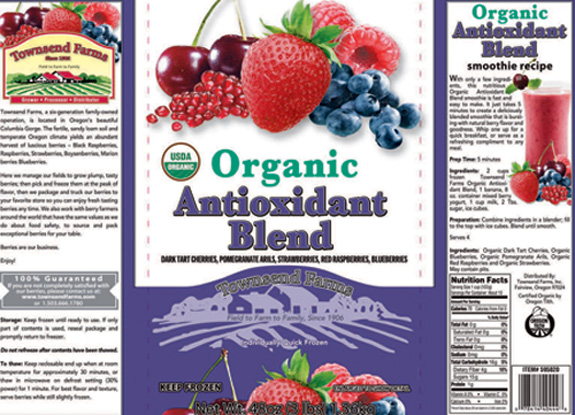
RECALLED – Organic Blend Antioxidant, Organic Antioxidant Berry Blend

June 28, 2013 – Product Recall – UPDATED RELEASE #3 UPC Code Clarification Townsend Farms, Inc. Expands Voluntary Limited Lot Recall of Frozen Organic Antioxidant Blend, 3 lb. Bag.